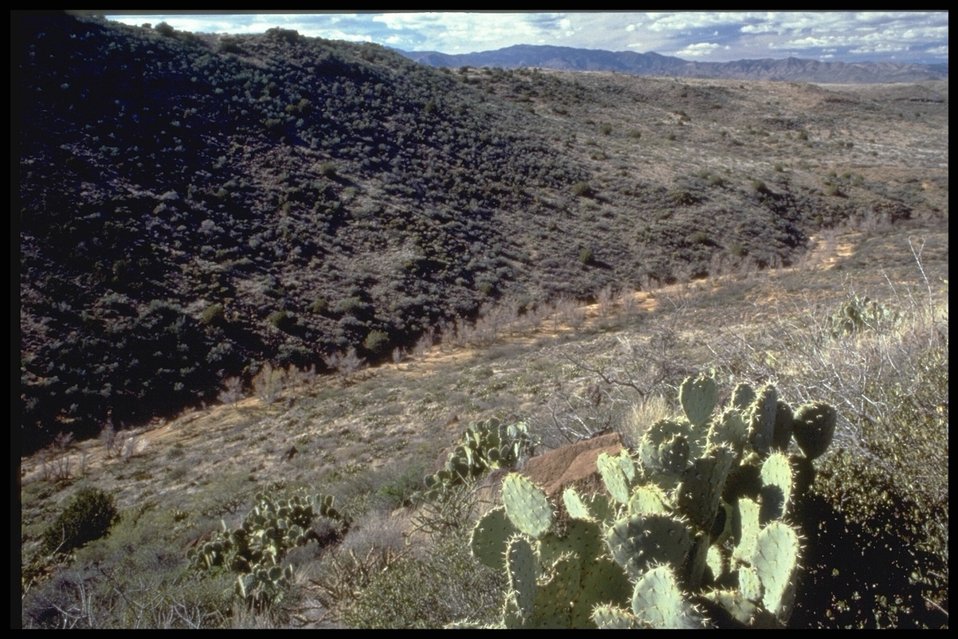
A Prickly Pear cactus and a valley in the Agua Fria National Monument.